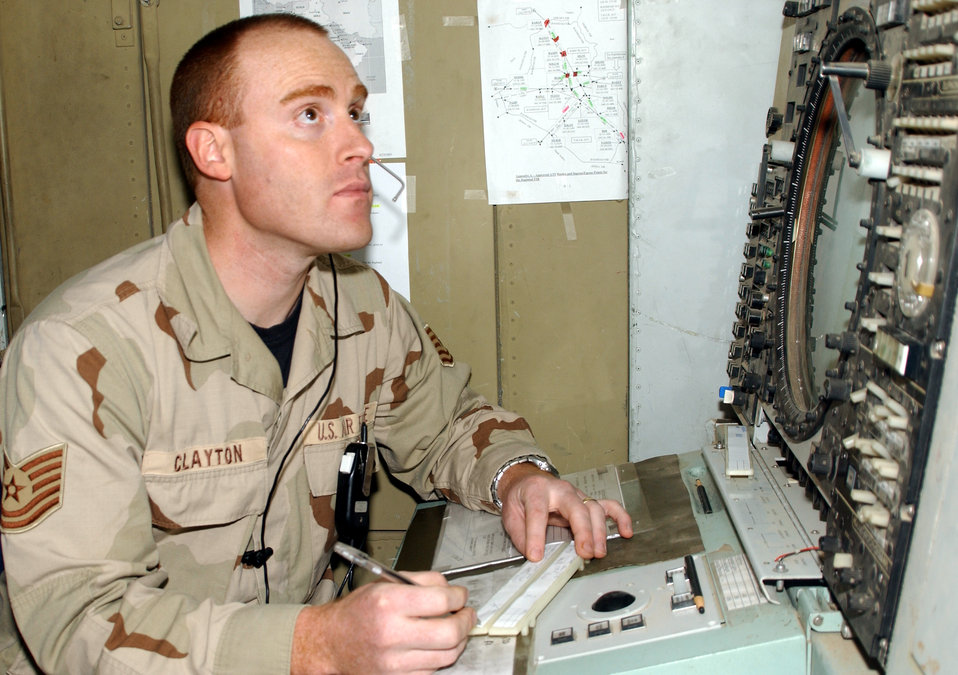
Controlling northern Iraq

KIRKUK AIR BASE, Iraq -- Tech. Sgt. Kevin Clayton monitors aircraft traffic from his position in the center radar approach control facility. The controllers are responsible for air traffic throughout northern Iraq.